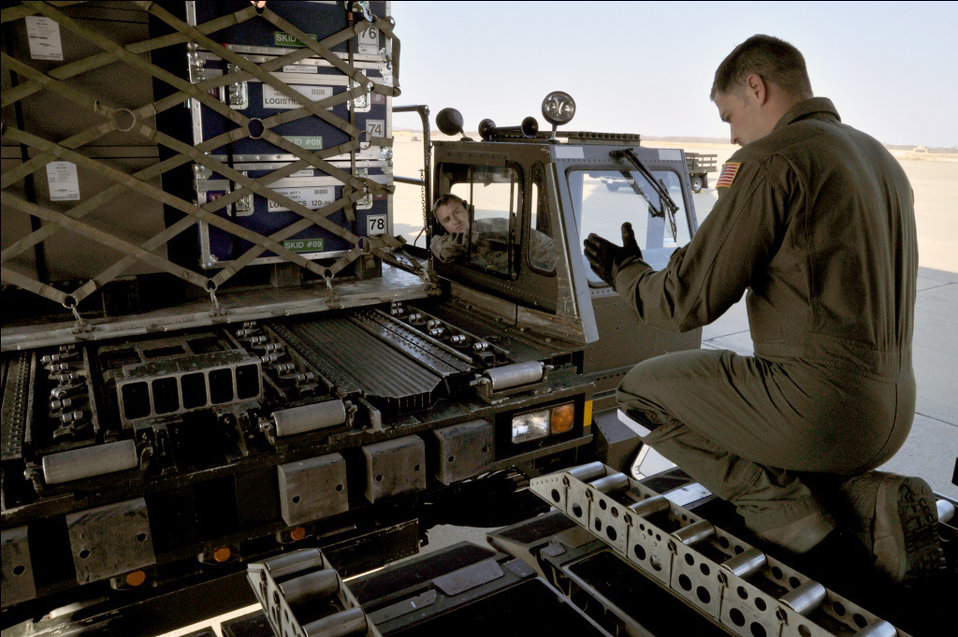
Mobility Airmen

Rescue equipment bound for Japan is moved to a C-17 Globemaster III March 12, 2011, at Joint Base Andrews, Md. Air transportation Airmen from the 89th Aerial Port Squadron prepared 14 pallets of technical search-and-rescue gear, including inflatable swift-water rescue boats, generators, trench rescue and cutting equipment. The gear is being transported by C-17 to provide assistance after an earthquake and tsunami hit Japan March 11, 2011.